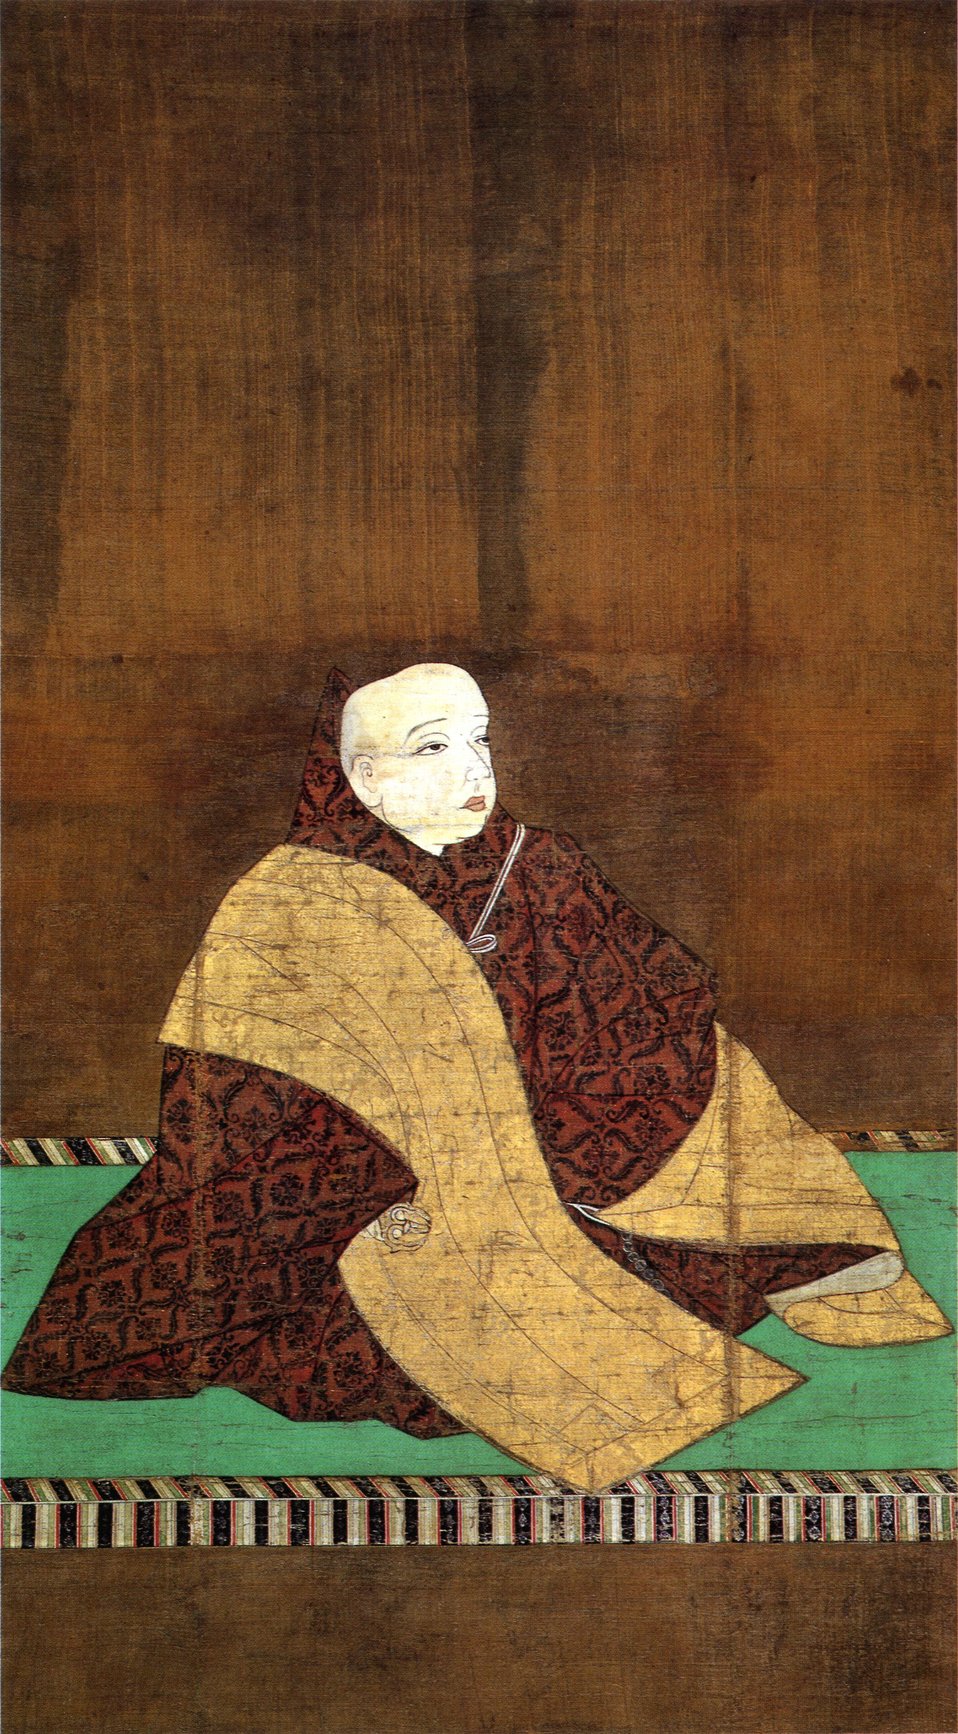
日本語: 尊円法親王像（絹本着色、豪信筆か、1350年頃、ホノルル美術館蔵） Portrait of Imperial Prince Abbot Son'en as a Buddhist Priest, color on silk attributed to Gōshin, Japanese, c. 1350, Honolulu Academy of Arts